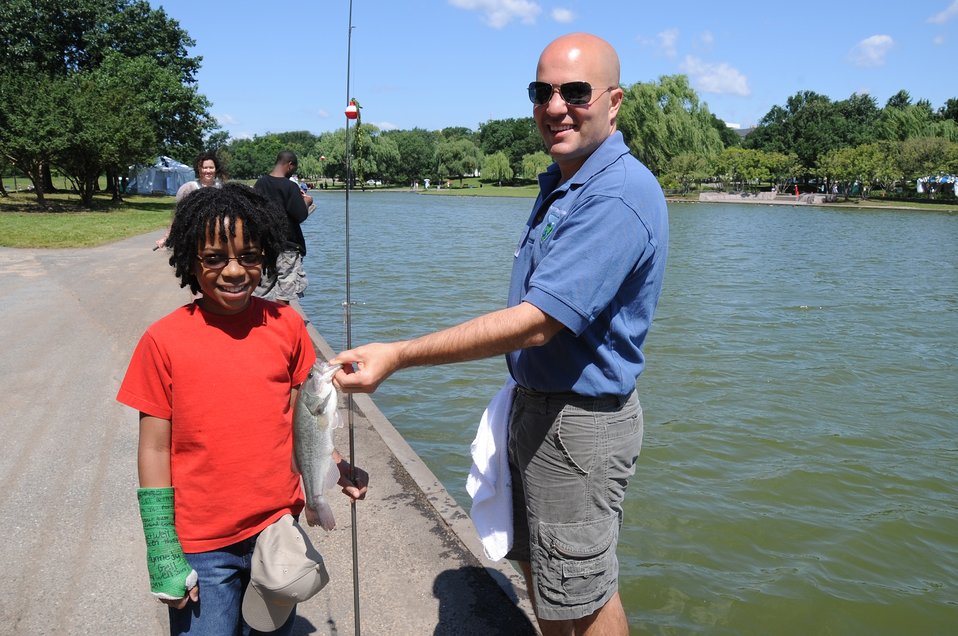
Caught one!

Many kids were excited to catch their first fish.